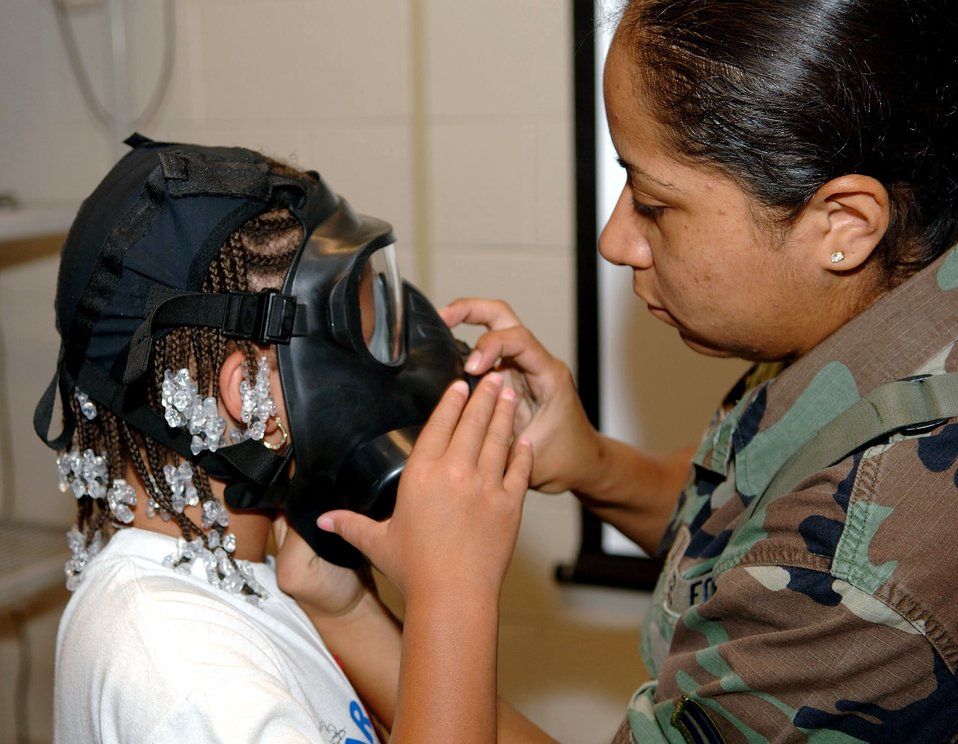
Operation Hero

Airman 1st Class Carolina Lasprilla helps Patrea Tilford put on a gas mask during Operation Hero at Langley Air Force Base, Va., Aug. 29. Operation Hero lets children see what their parents do when they get deployed.